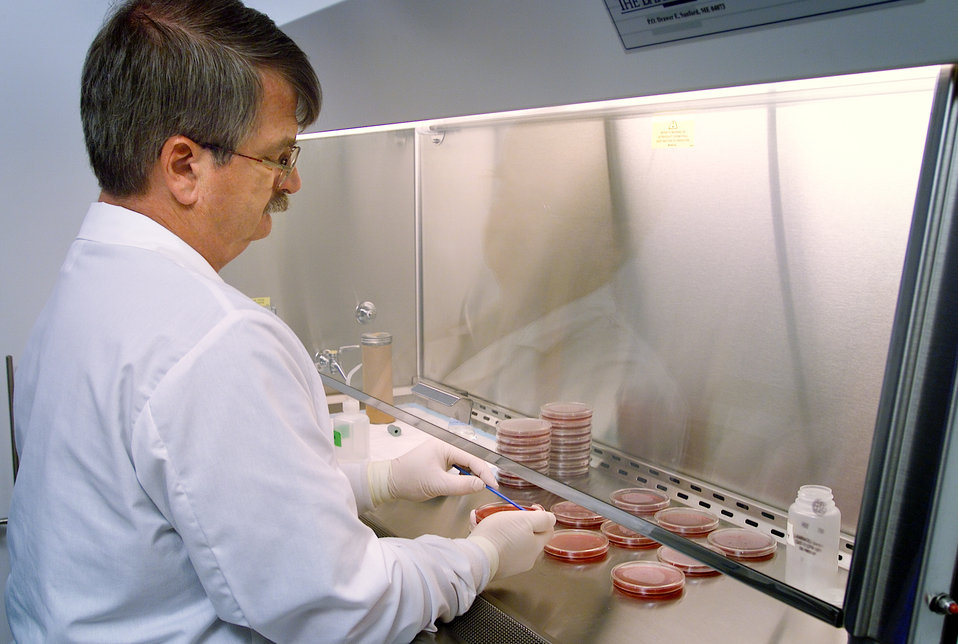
Arnold Steigerwalt, a research chemist with the Centers for Disease Control's Meningitis and Special Pathogens Branch (MSPB) in the National Center for Infectious Diseases (NCID), was shown here as he was performing a DNA-DNA hybridization analysis in one of the CDC's laboratories.